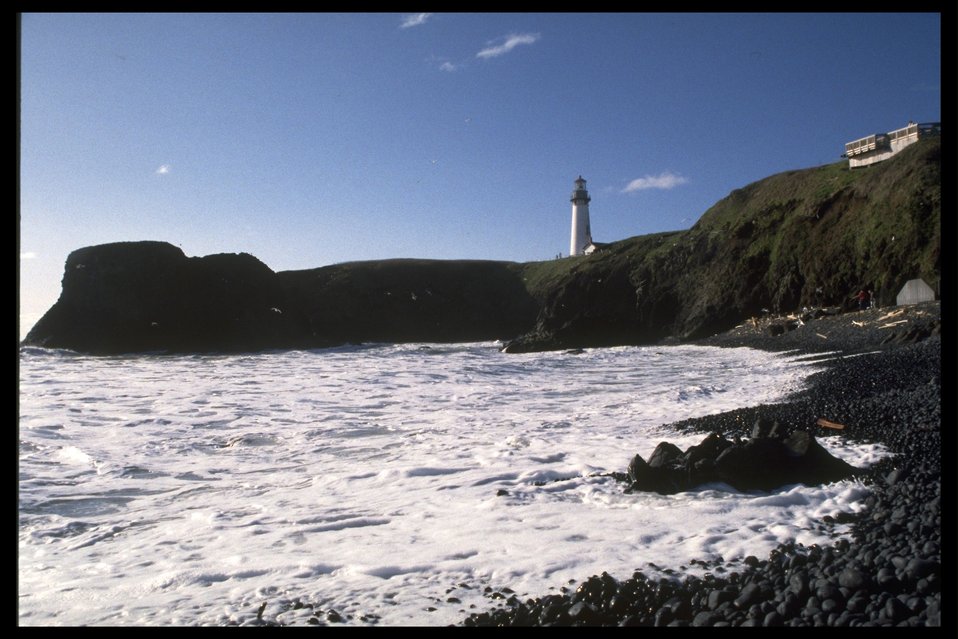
Yaquina Head Lighthouse.